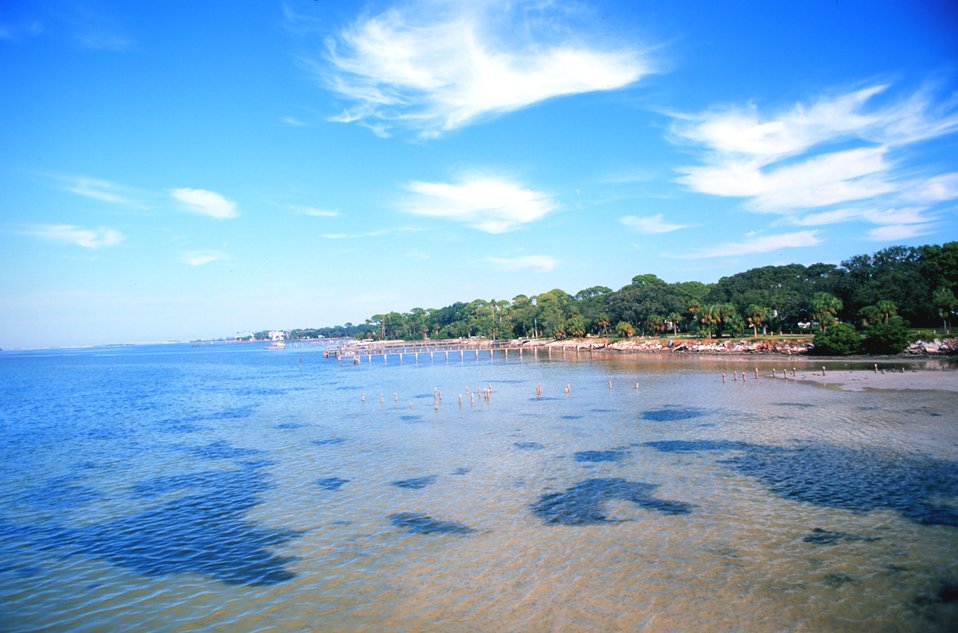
The shoreline at high tide